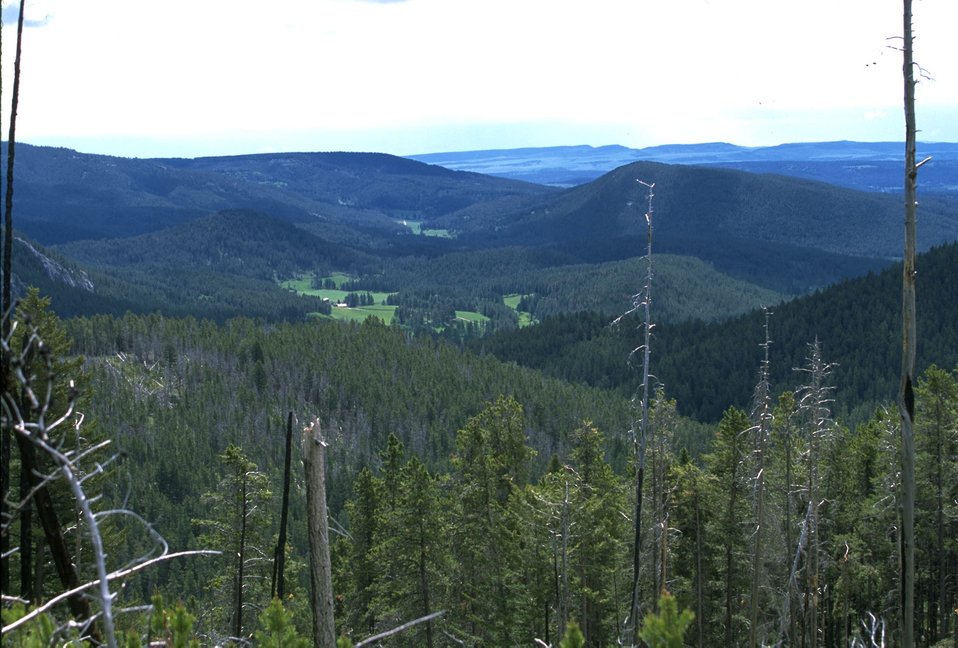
Forested mountains and meadows in the Judith Mountains